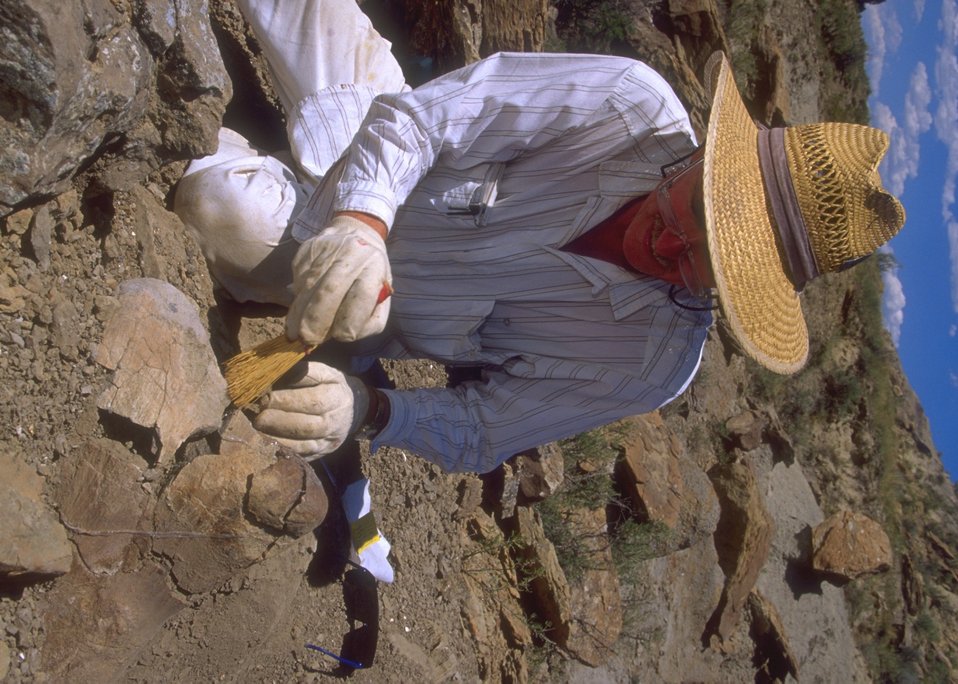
Paleontologist working a dig for dinosaur bones, Lance Creek Fossil Area, Newcastle Field Office.